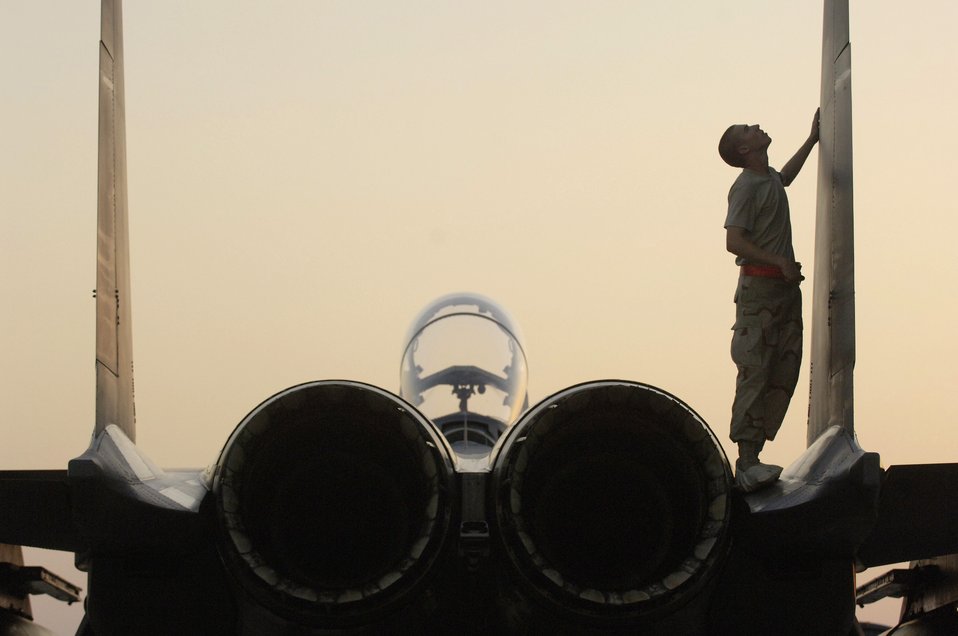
Post flight inspection

Airman 1st Class Kevin Romer performs a post flight inspection on one of six RAF Lakenheath-based F-15E Strike Eagles that landed in Southwest Asia on Sept. 21. The 494th Fighter Squadron jets are the first squadron aircraft to arrive in theatre. Airman Romer is assigned to the 494th Aircraft Maintenance Unit.